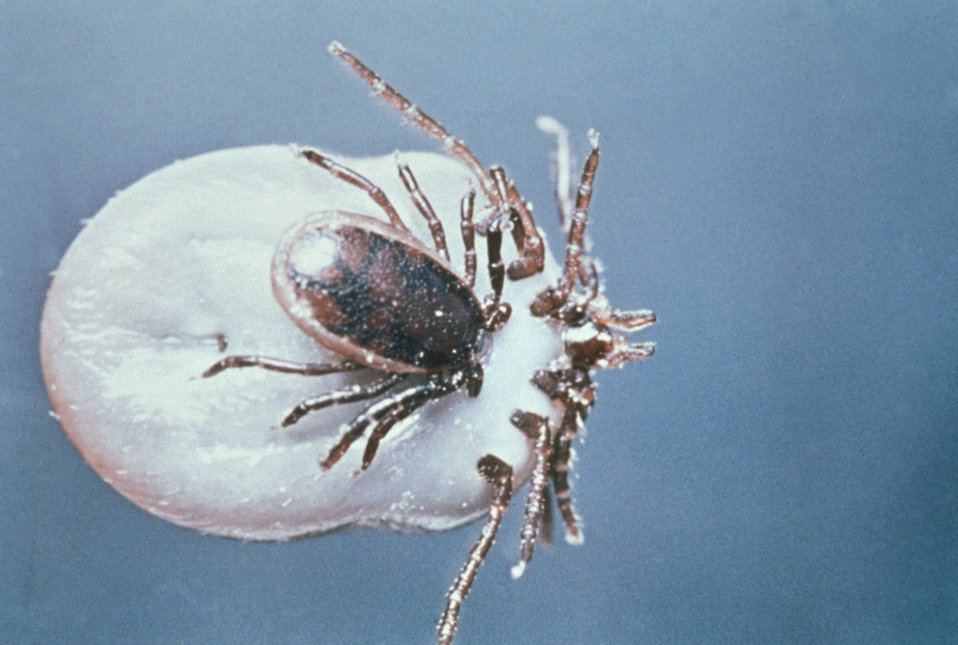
This is a male Ixodes ricinus tick (smaller) shown copulating with a female tick (larger).